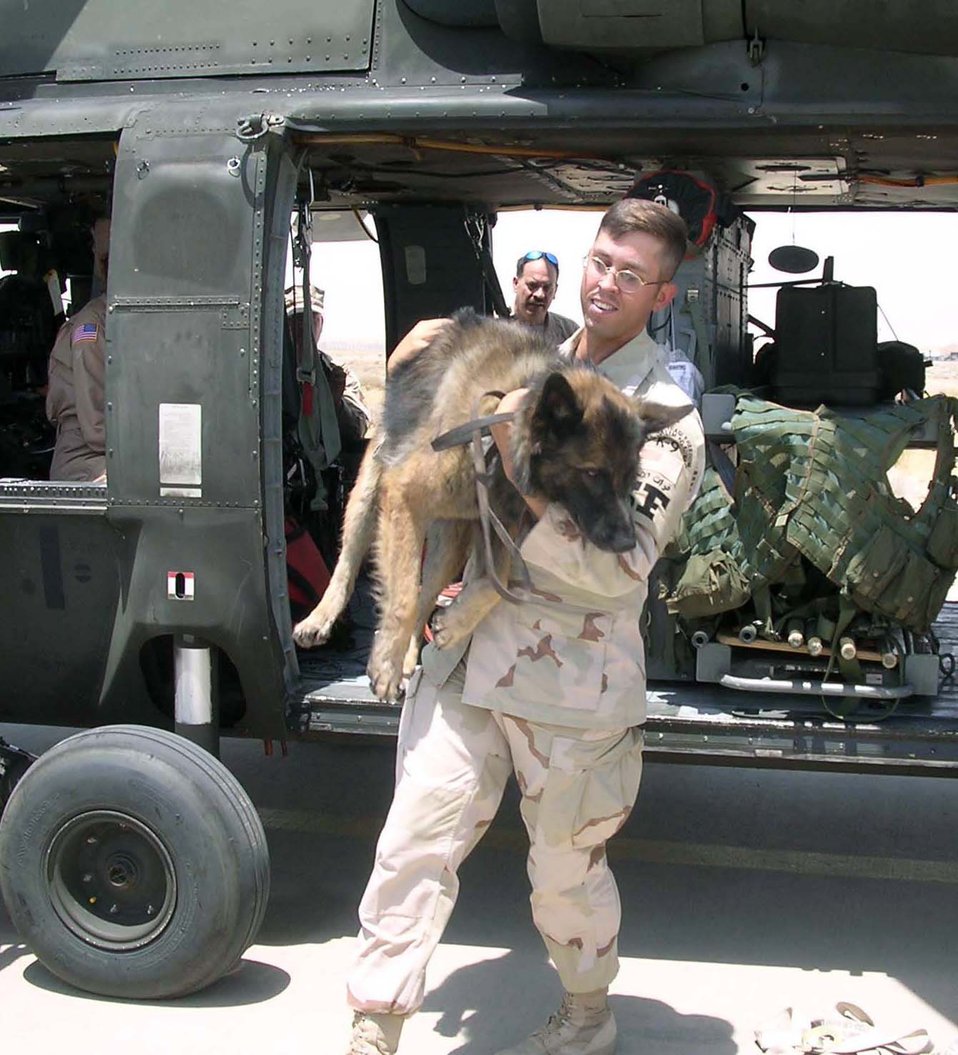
K-9s receive top care in deployed environment

SOUTHWEST ASIA -- Staff Sgt. Jonathan Eha carries Mathys, a military working dog, during a recent exercise at a forward-deployed location. They are assigned to the 386th Expeditionary Security Forces Squadron.